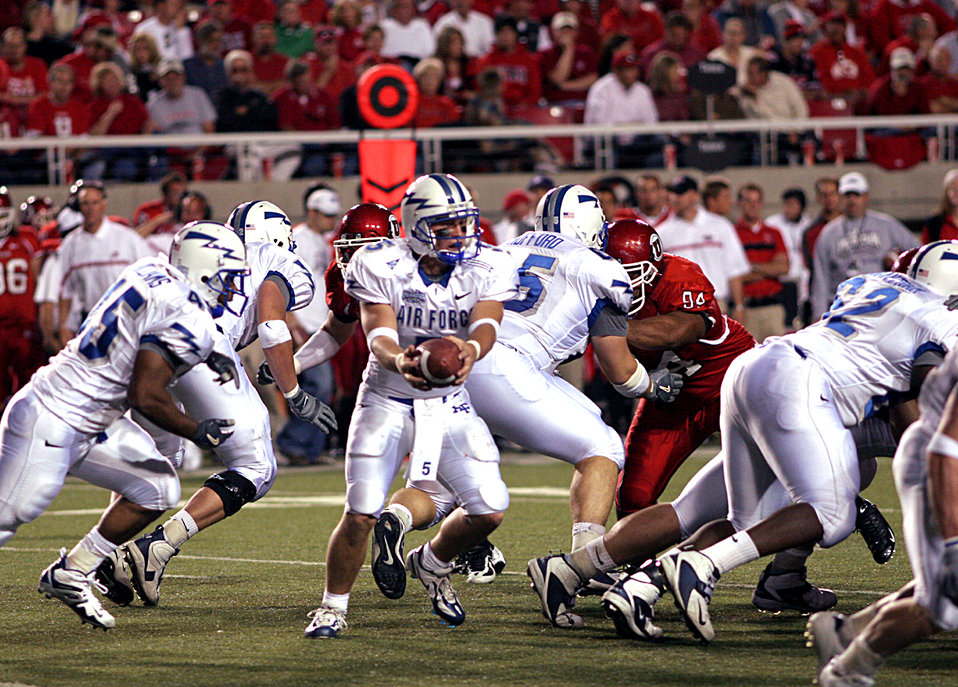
Falcon’s fourth-quarter comeback falls short in 38-35 loss

SALT LAKE CITY -- Air Force quarterback Shaun Carney, 5, readies a handoff to fullback Ryan Williams, 45, as the Falcon offensive line clears the way.